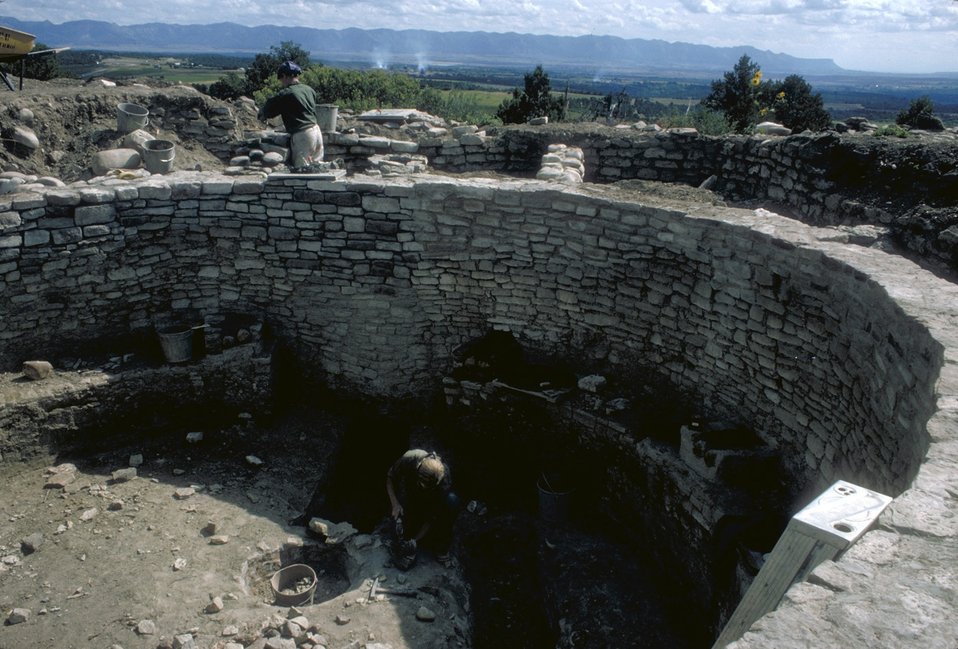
Escalante Ruin, Kiva Stabilization